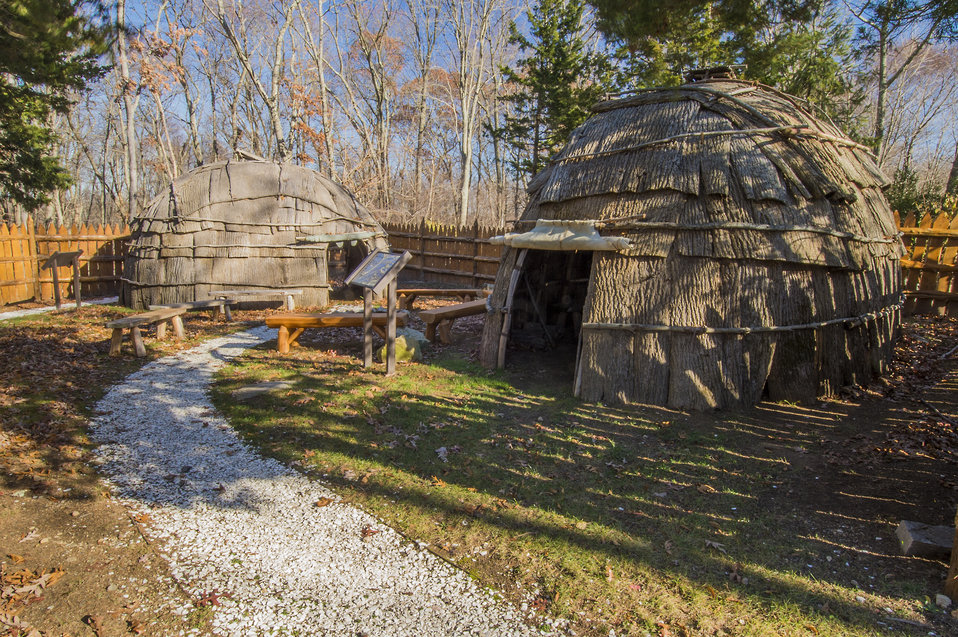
The Mohegan Tribe’s museum is the oldest Indian owned and operated museum in America. Gladys Tantaquidgeon along with her brother, Harold and father John, built the museum in 1931 in Uncasville, CT as a place to keep Mohegan treasures.